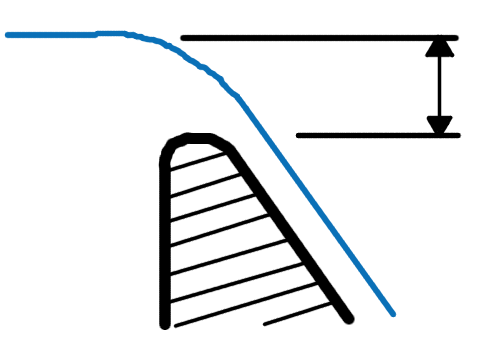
Deutsch: Zeigt die Überfallhöhe über einem Wehr